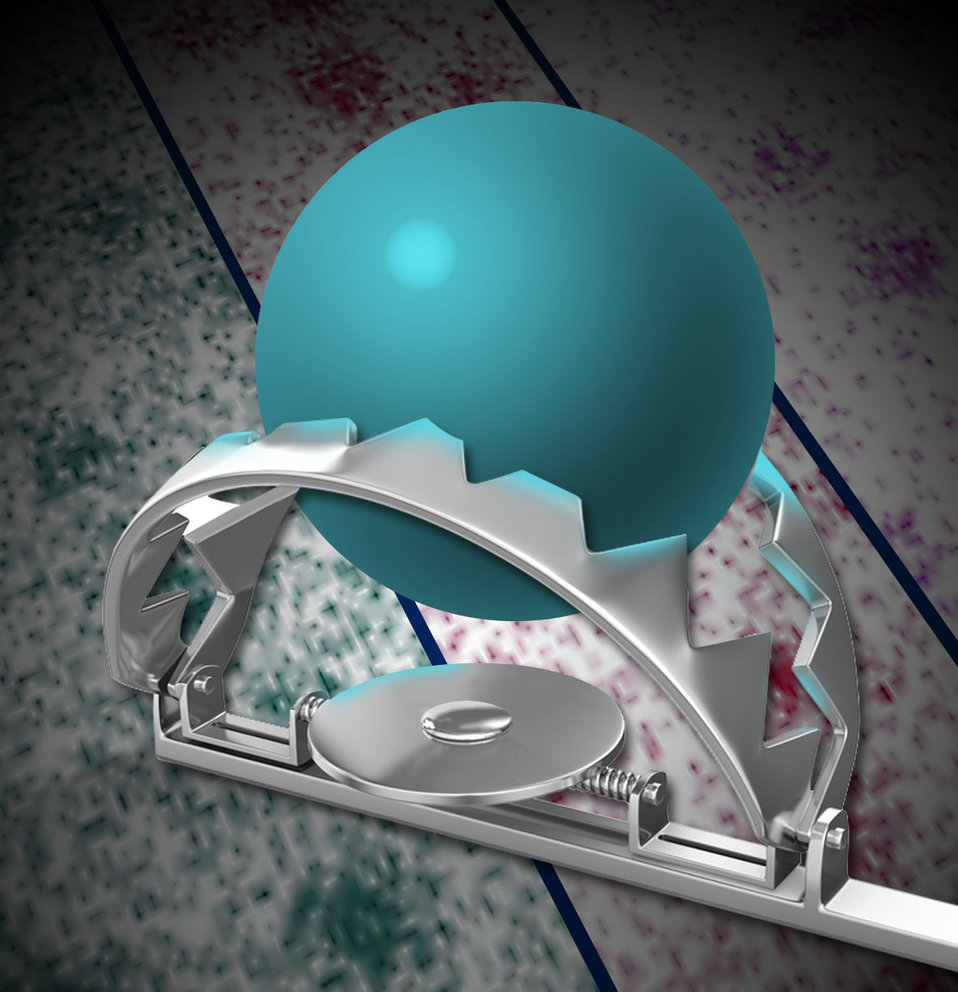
At PNNL scientists using various analysis tools at EMSL to examine and quantify complex nanoclusters within oxide dispersion strengthened steels have a new view of how these metal materials display resistance and stability under a range of irradiation conditions.